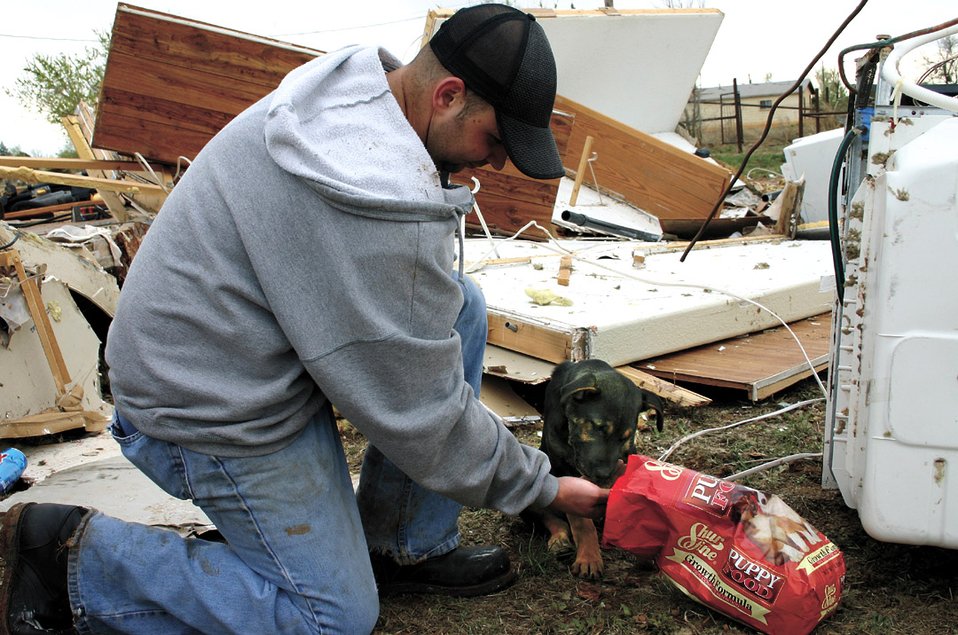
Cannon volunteers lend hands, hope in wake of disaster

Staff Sgt. Obed Brown feeds a dog made stray by a tornado that struck Clovis, N.M., March 23. More than 500 volunteers from nearby Cannon Air Force Base stepped up to help their host city in time of need. Sergeant Obed is assigned to the 27th Component Maintenance Squadron.